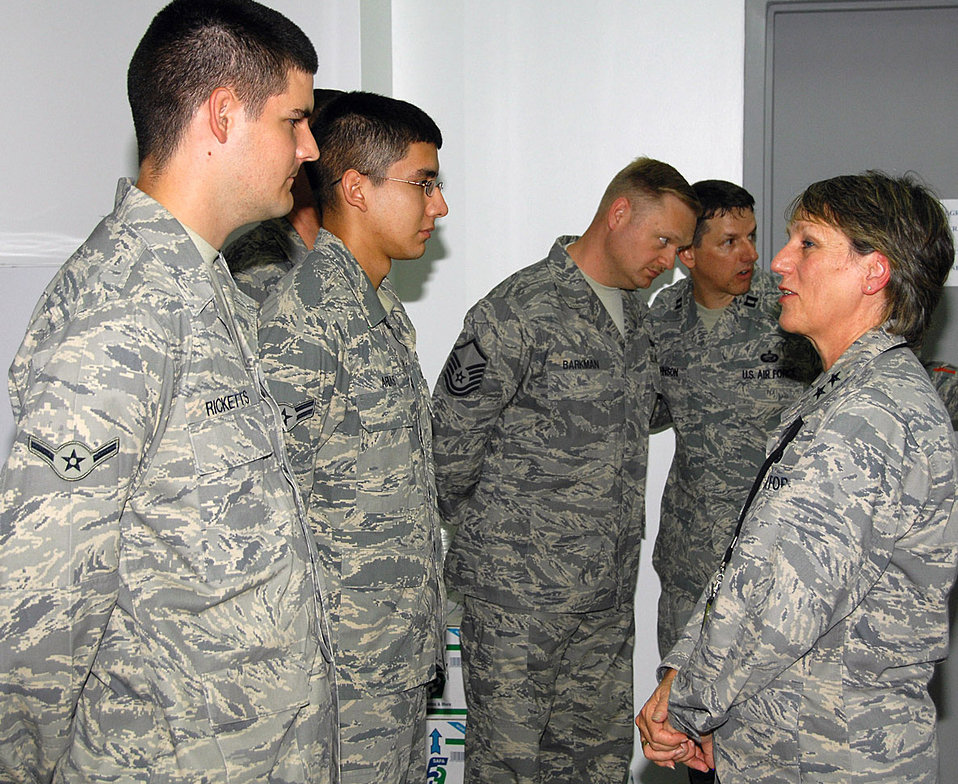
AFPC commander visits deployed air bases

Maj. Gen. K. C. McClain, commander of the Air Force Personnel Center, visits with Airmen of the 386th Air Expeditionary Wing Aug. 25 in Southwest Asia.